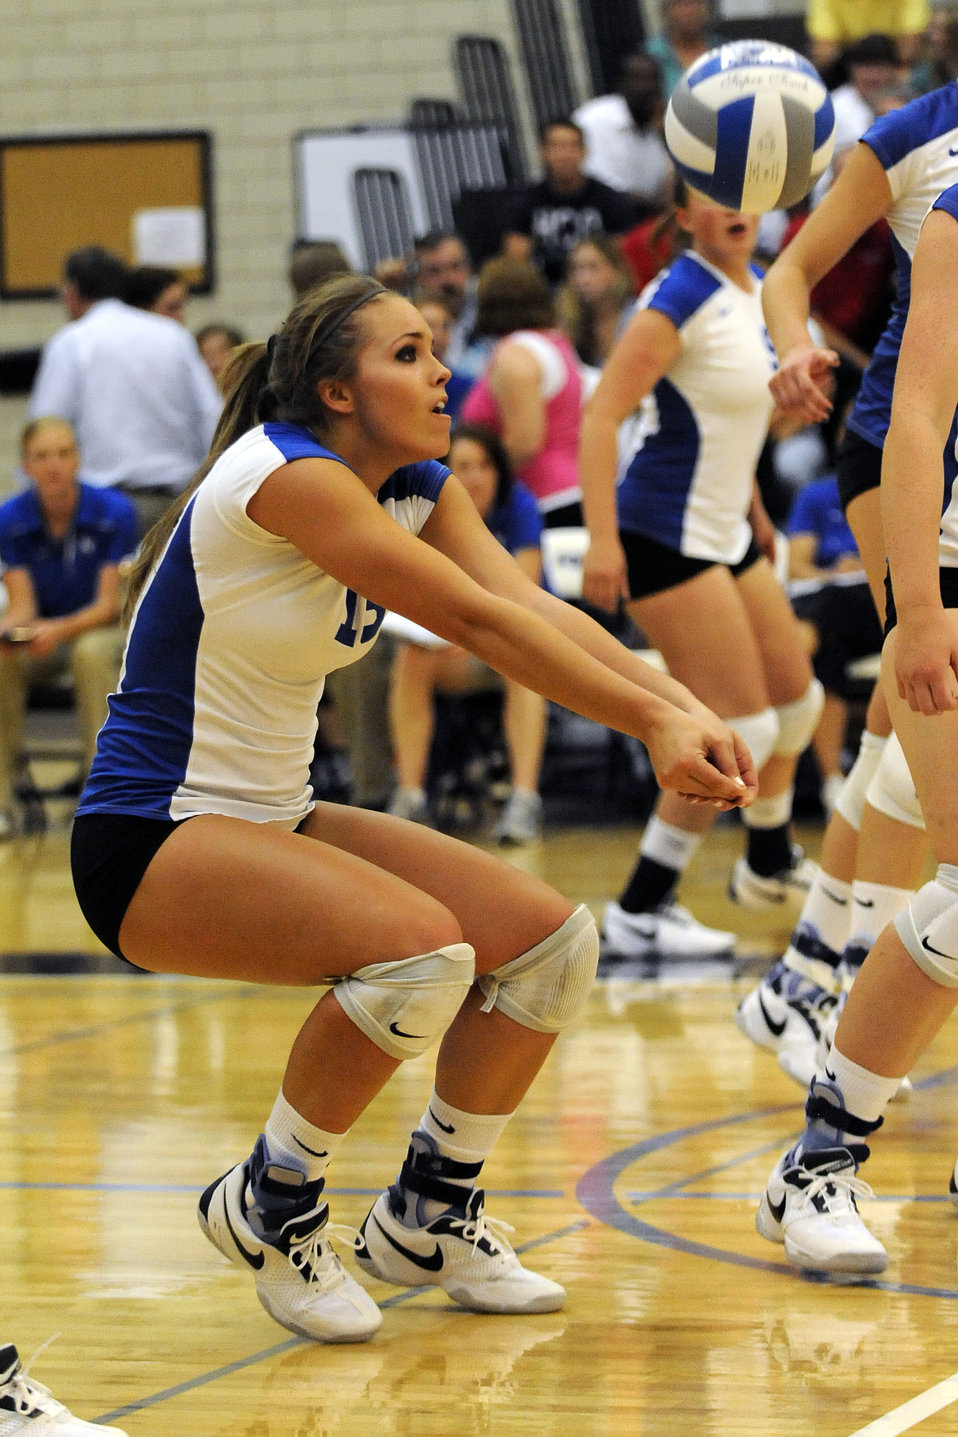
Cadet's show promise during women's volleyball tournament

Air Force's Caroline Kurtz bumps the ball during the second set of their season opener against Long Island, Aug. 27, 2010, at the U.S. Air Force Academy in Colorado Springs, Colo. The Falcons won 3-2 over Long Island with scores of 25-14, 22-25, 29-31, 25-19 and 15-9.